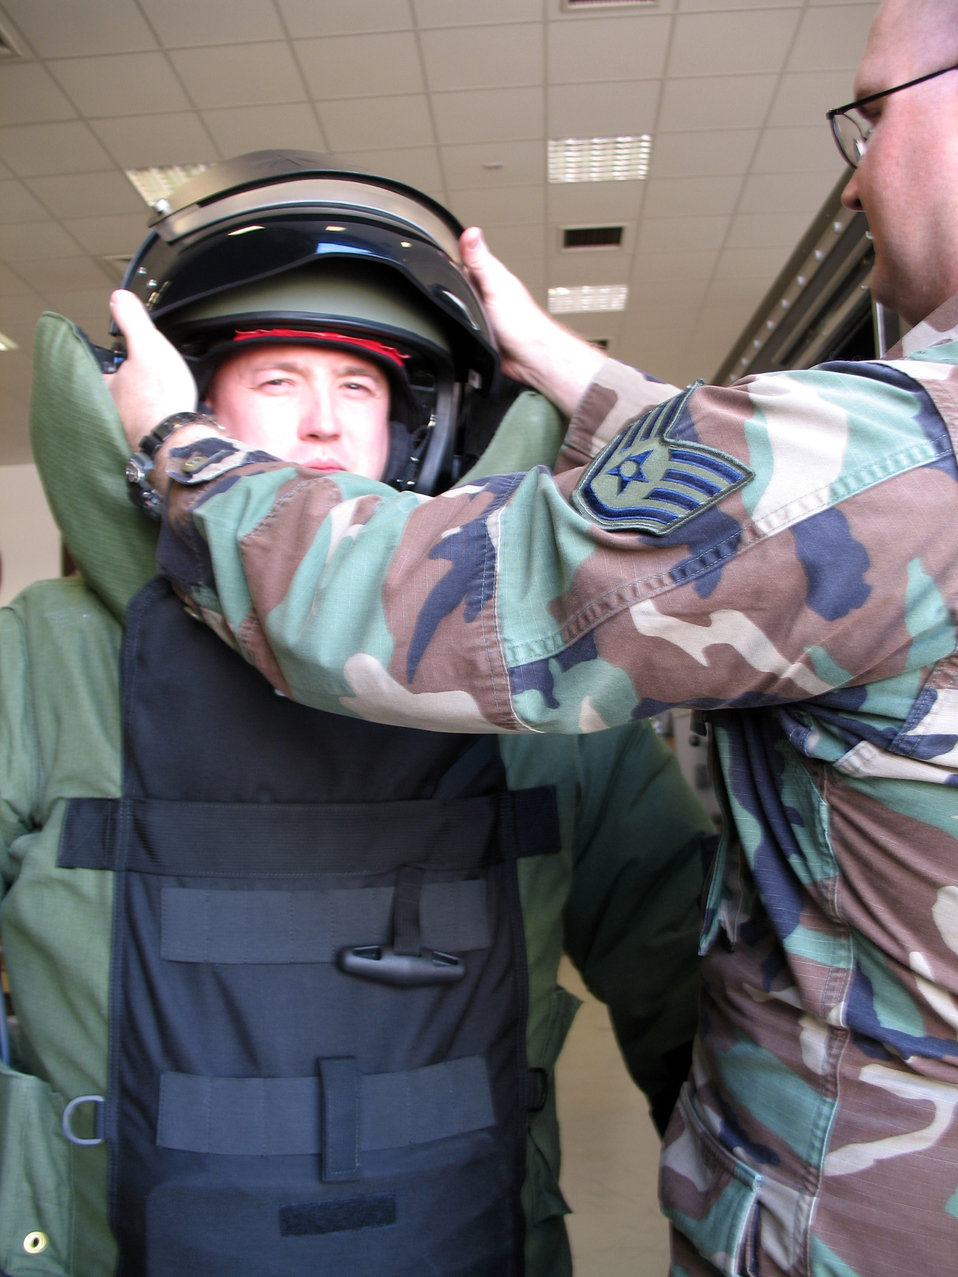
Preparation critical for EOD Airmen

Staff Sgt. Kristoffer Solesbee (right) helps Staff Sgt. Edward Albietz with his bomb suit helmet March 12 in Iraq. The helmet is made of ballistic glass to help shield explosive ordnance members from a bomb blast and fragmentation.